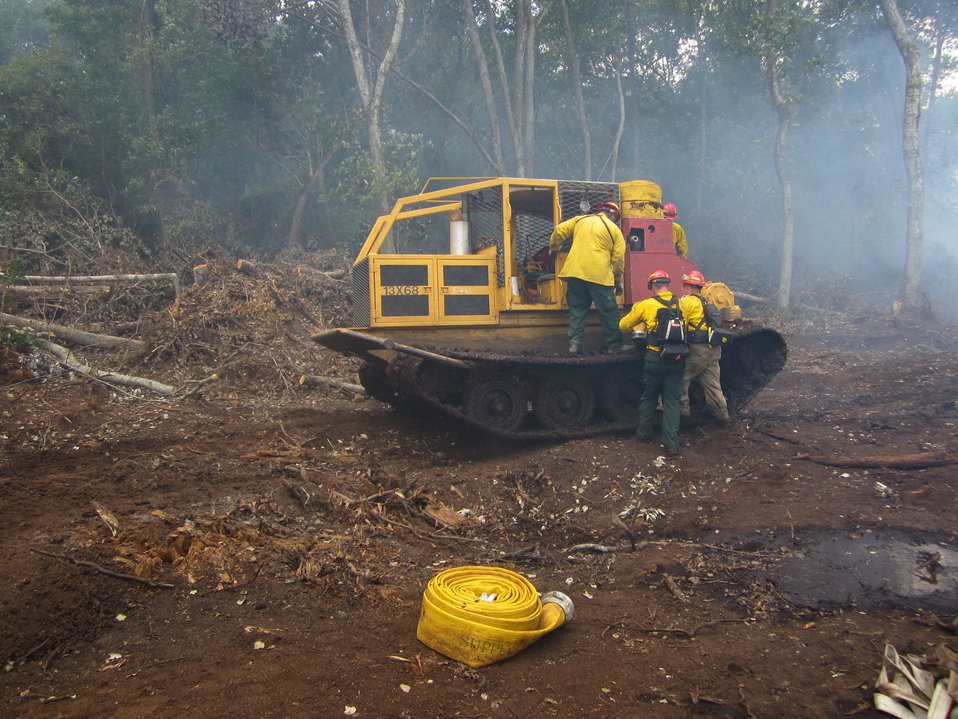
Flex track hose collection

Suffolk, VA, August 2011: Specialized low-pressure vehicles are used to get around the swamp to put out the Lateral West Fire in Great Dismal Swamp .